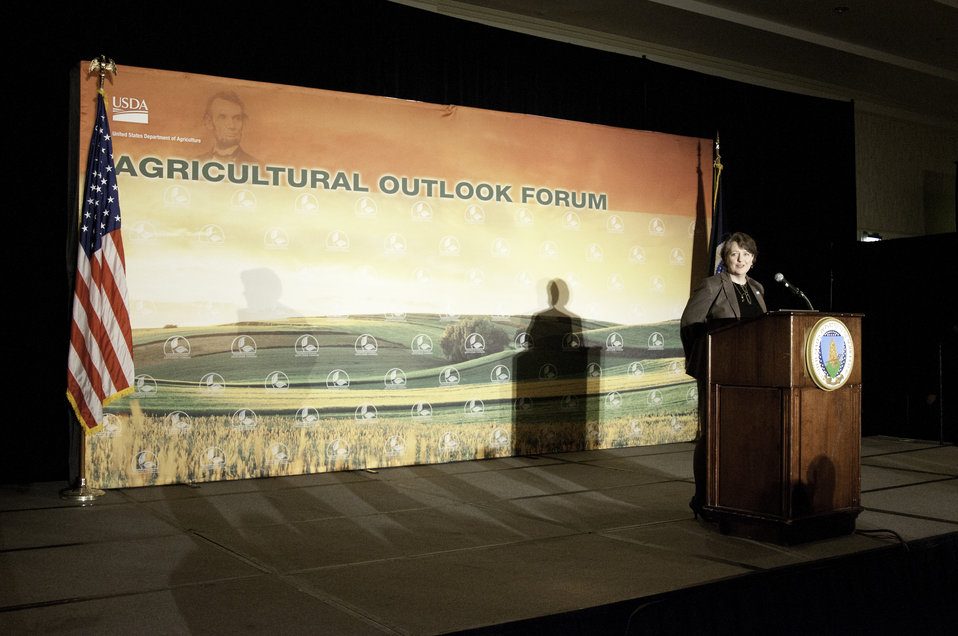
Agriculture Deputy Secretary Kathleen Merrigan makes welcoming remarks at the 2012 Agricultural Outlook Forum, “Moving Agriculture Forward” in Arlington, VA. on Thursday, February 23, 2012.